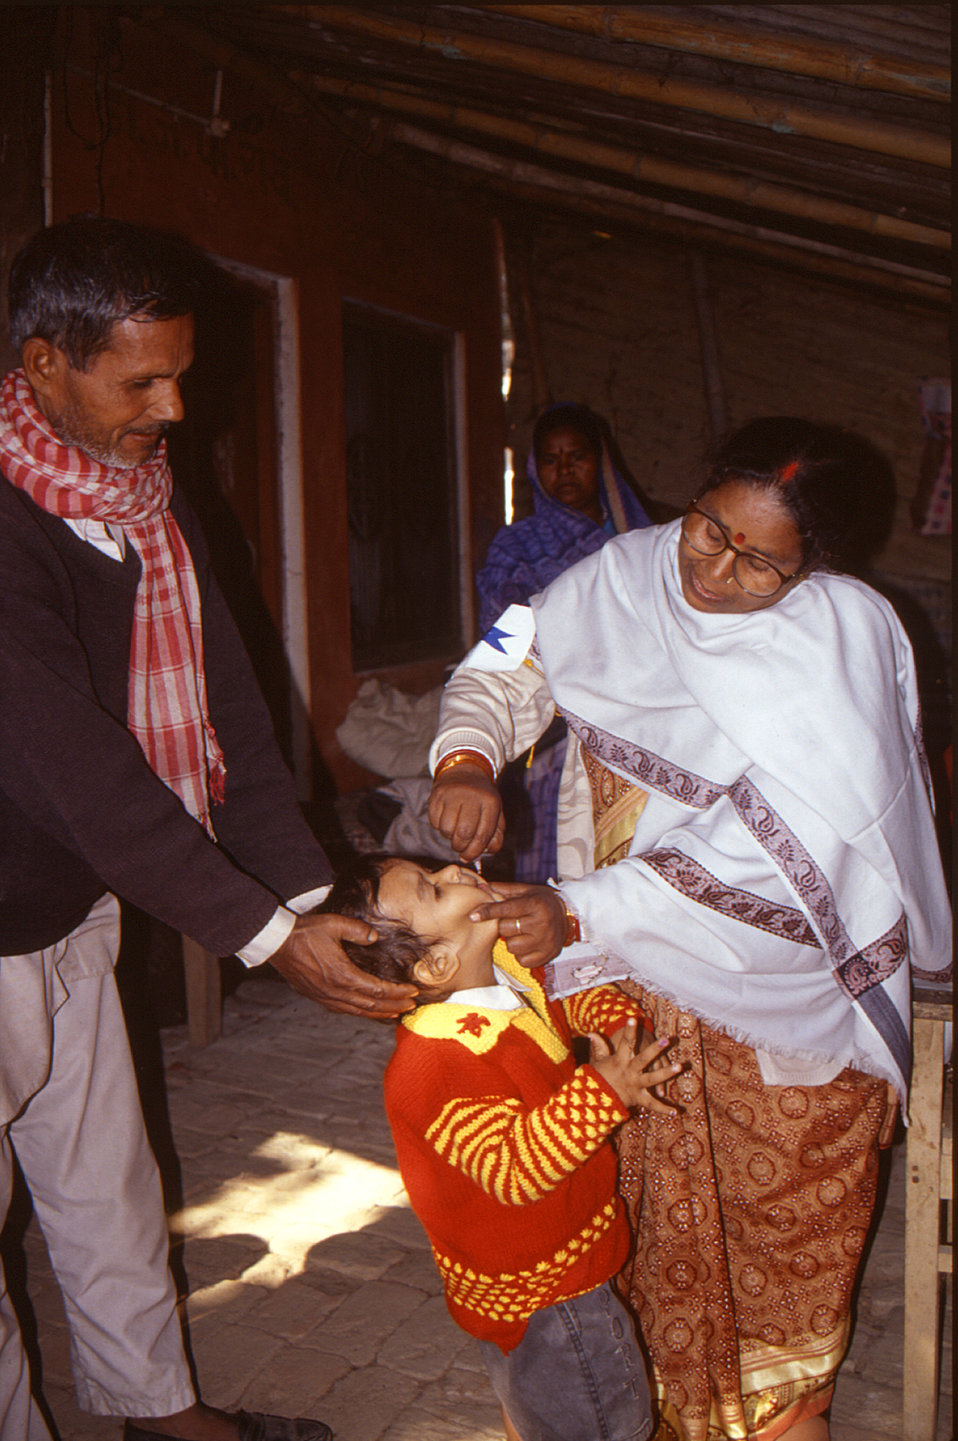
A child receiving a polio vaccine

This 2000 photograph, provided by Chris Zahniser, B.S.N., R.N., M.P.H., a STOP Transmission of Polio (STOP) immunization initiative team member and photographer, depicted a clinic worker as she was administering an oral polio vaccine dosage to a child during one of India's National Immunization Days (NID). Following each NID, health workers would visit each home in a given District, in order to verify that all children under 5 years of age had received the polio vaccine. Chris was assigned to the state of Uttar Pradesh in northern India, and spent three months working in the Districts of Gorakhpur and Deoria.